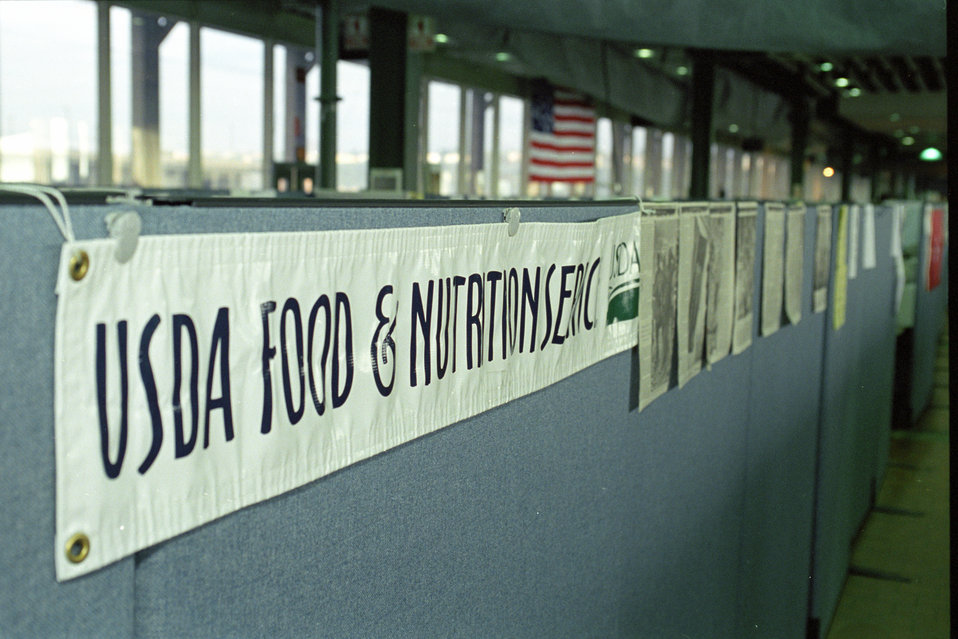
September 11, 2001 terrorists attacked the World Trade Center in New York City, NY, the Pentagon in Arlington, VA and a field in rural Pennsylvania. After the attacks the U.S. Department of Agriculture (USDA) Forest Service (FS) Incident Management Teams restored communications and provided initial incident command of the World Trade Center and Pentagon Crash sites on September 26, 2001. USDA’s Food Nutrition Service (FNS) was also on site providing food assistance to volunteers.